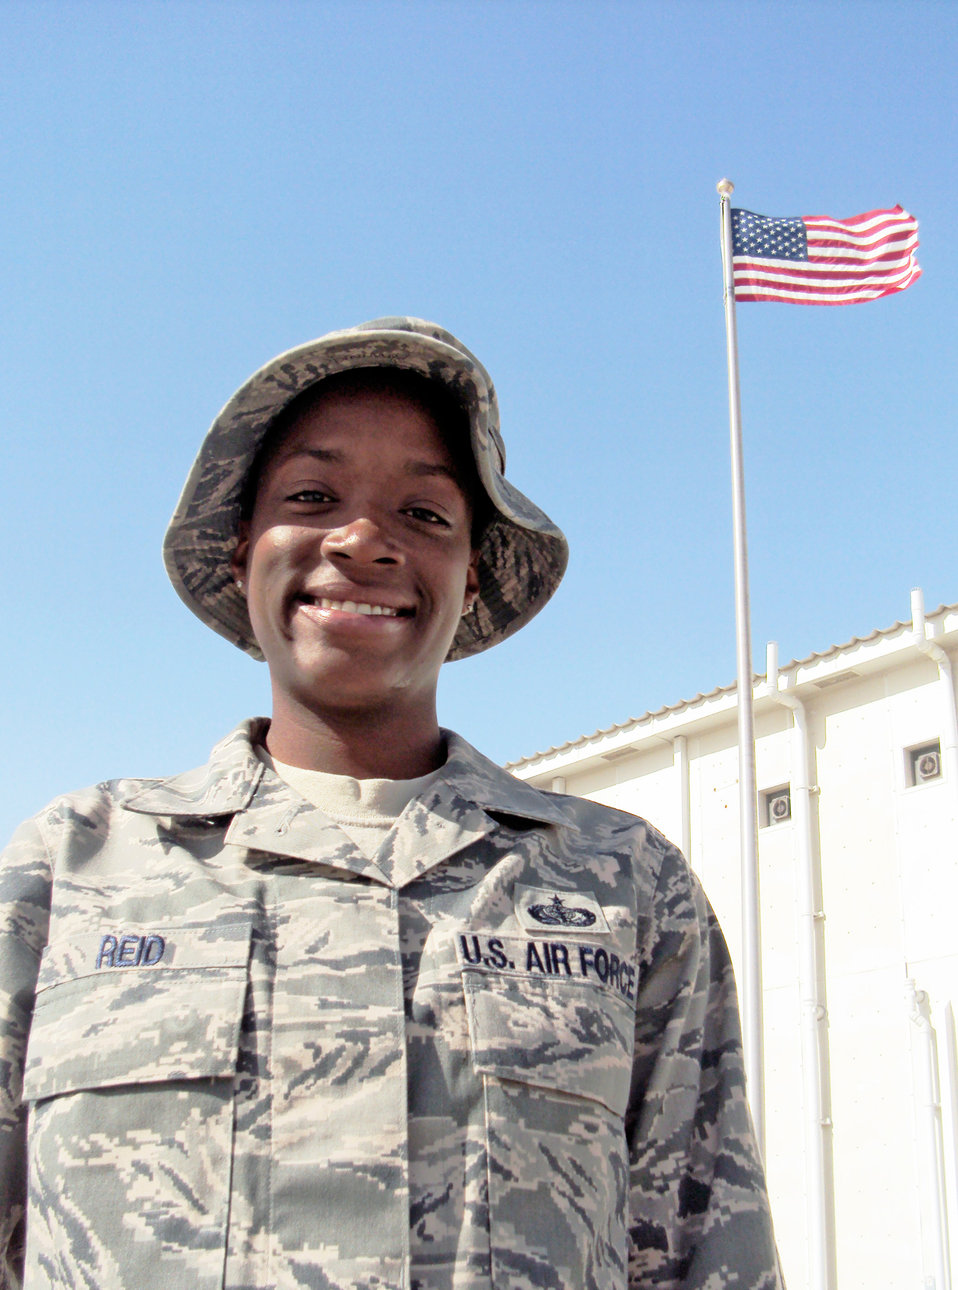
Lakenheath staff sergeant says life's events made her a better Airman

Staff Sgt. Sparkle Reid, a services journeyman, is deployed as the non-appropriated funds custodian for the 380th Expeditionary Force Support Squadron at an air base in Southwest Asia. She is pictured here in front of the 380th Air Expeditionary Wing headquarters Feb. 25, 2010. Sergeant Reid is deployed from from the 48th Force Support Squadron at Royal Air Force Lakenheath, England, and her hometown is Queens, N.Y.